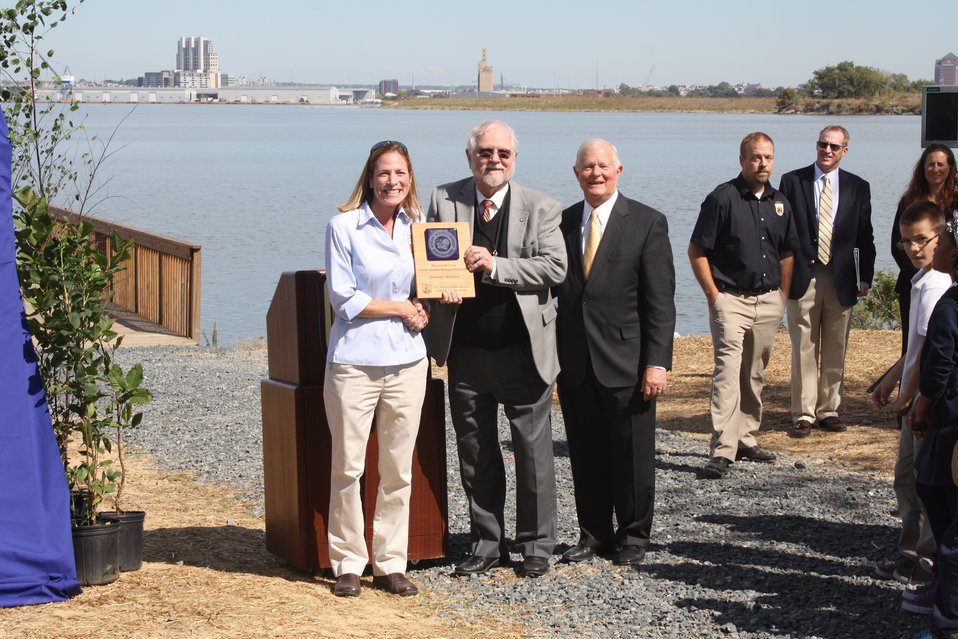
Presenting the designation plaque

Northeast Regional Director Wendi Weber presents the Masonville Cove Urban Wildlife Refuge Partnership designation plaque to Frank Hamons of Maryland Port Administration.